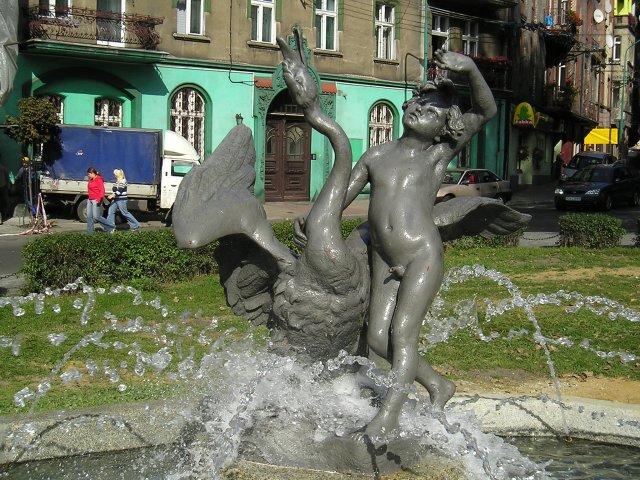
03-chlopiec-chorzow